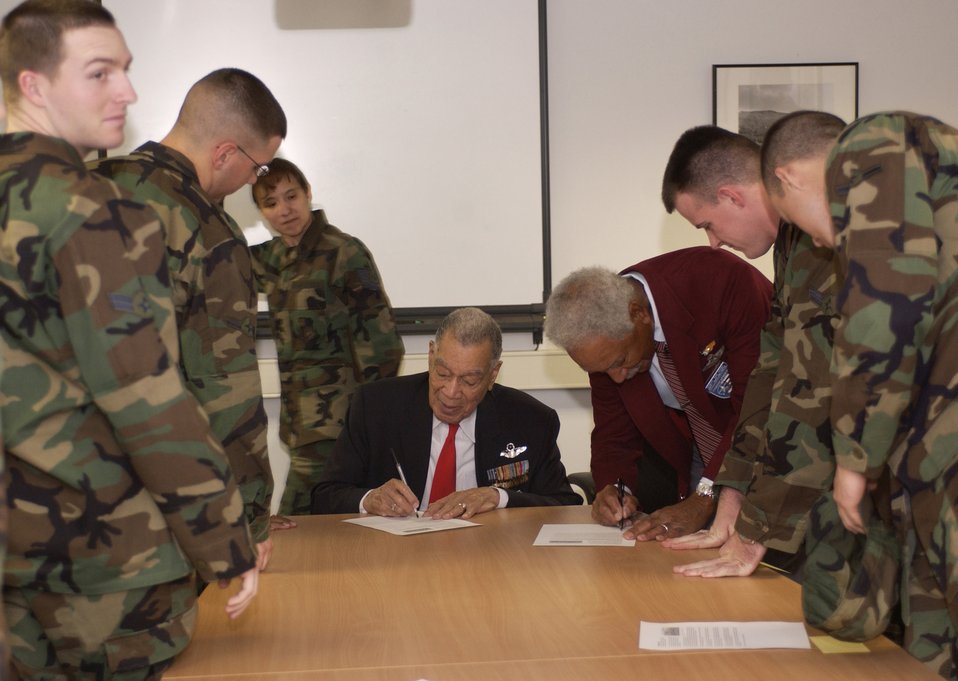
Tuskegee Airmen visit Spangdahlem

SPANGDAHLEM AIR BASE, Germany (AFPN) -- Retired Lieutenant Colonels Lee Archer and Robert Ashby, members of the original Tuskegee Airmen, visit the first term Airman center to sign autographs. The Tuskegee Airmen visited the base Feb. 21 as part of the celebration of African-American History Month.